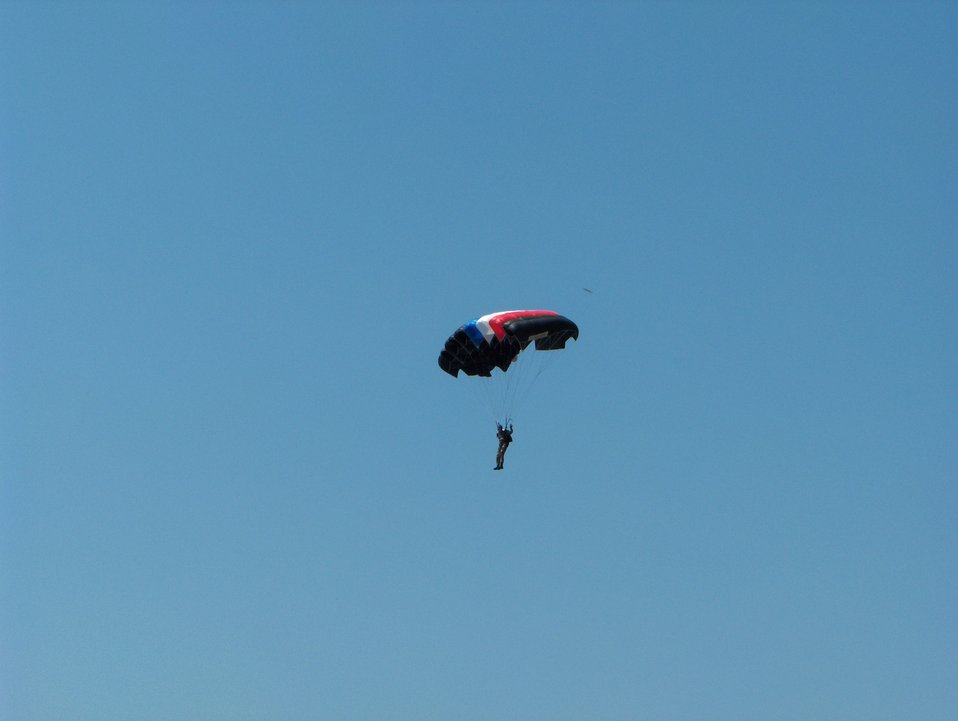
French paratrooper during a ceremony on the Circuit de Nevers Magny-Cours, before the 2006 Formula One Grand Prix. Fran√ßais†: Para fran√ßais durant une c√©r√©monie sur le Circuit de Nevers Magny-Cours, lors du Grand Prix de Formule Un en 2006.